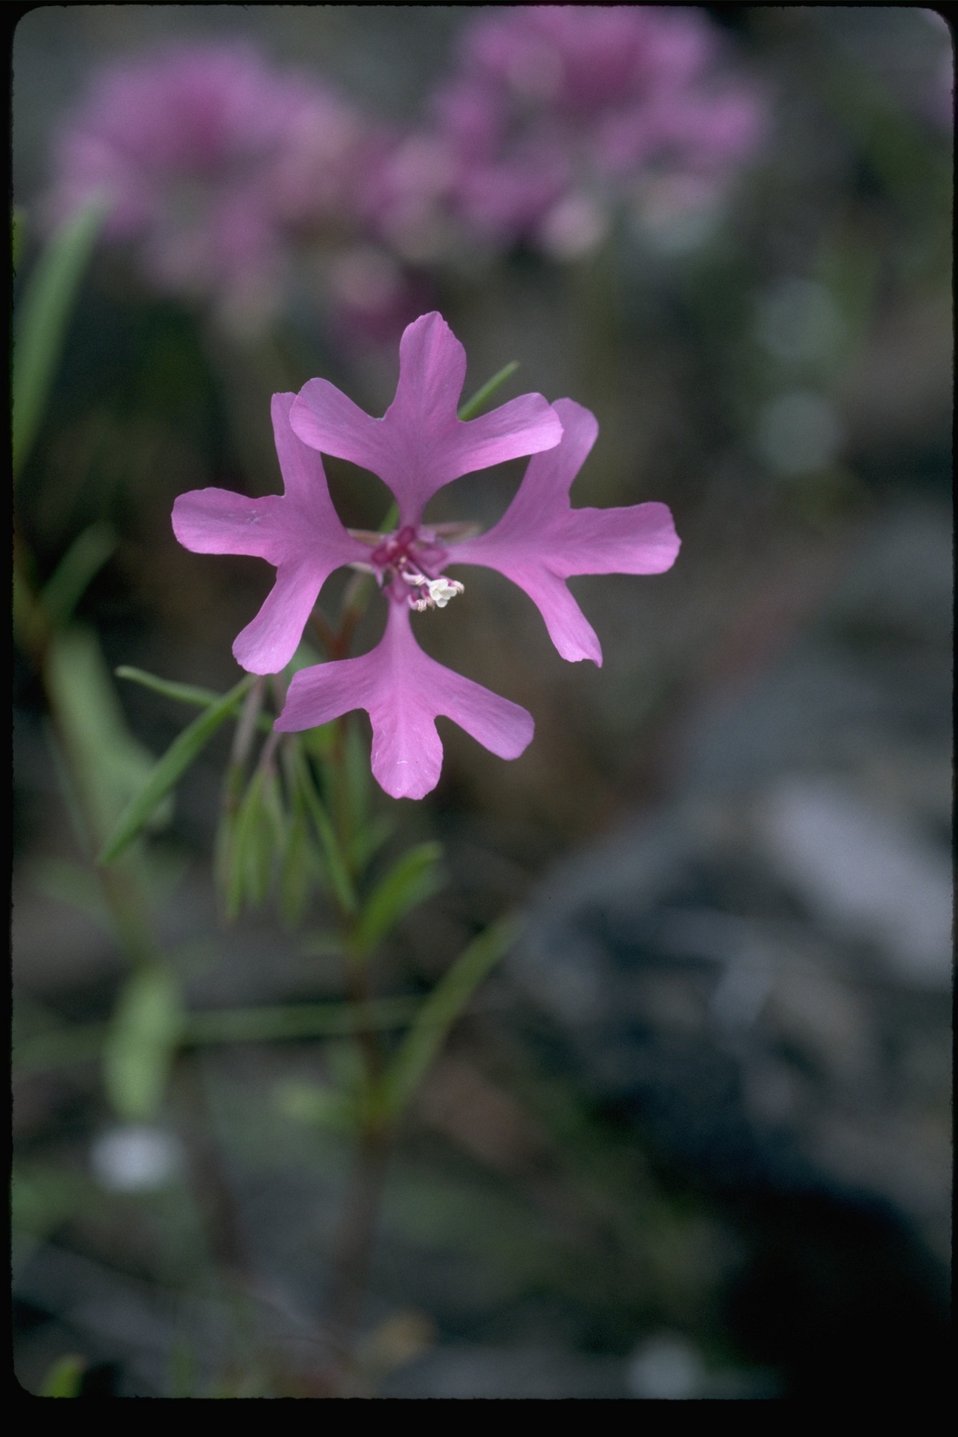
Clarkia (Clarkia pulchella) near Blitzen Crossing on Steens Mountain in Southeastern Oregon.